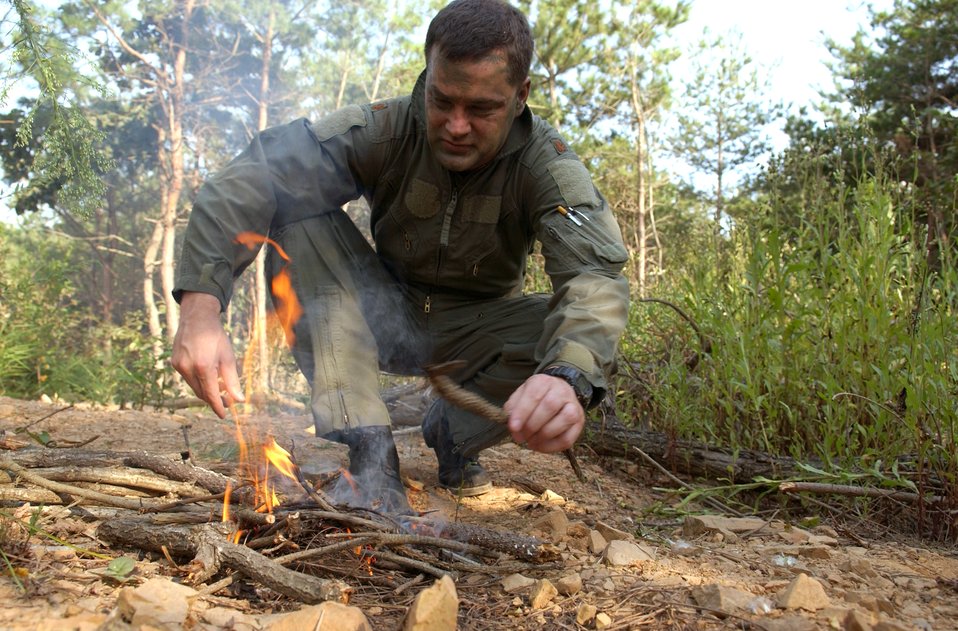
Life-saving training at Osan AB

Maj. Paul Neidhardt starts a fire using a block of flint during combat search and rescue training Sept. 21 near Osan Air Base, South Korea. Annual training is conducted by survival, evasion, resistance and escape instructors to reacquaint aircrew members with combat search and rescue procedures and techniques. Major Neidhardt is with the 25th Fighter Squadron at Osan AB.